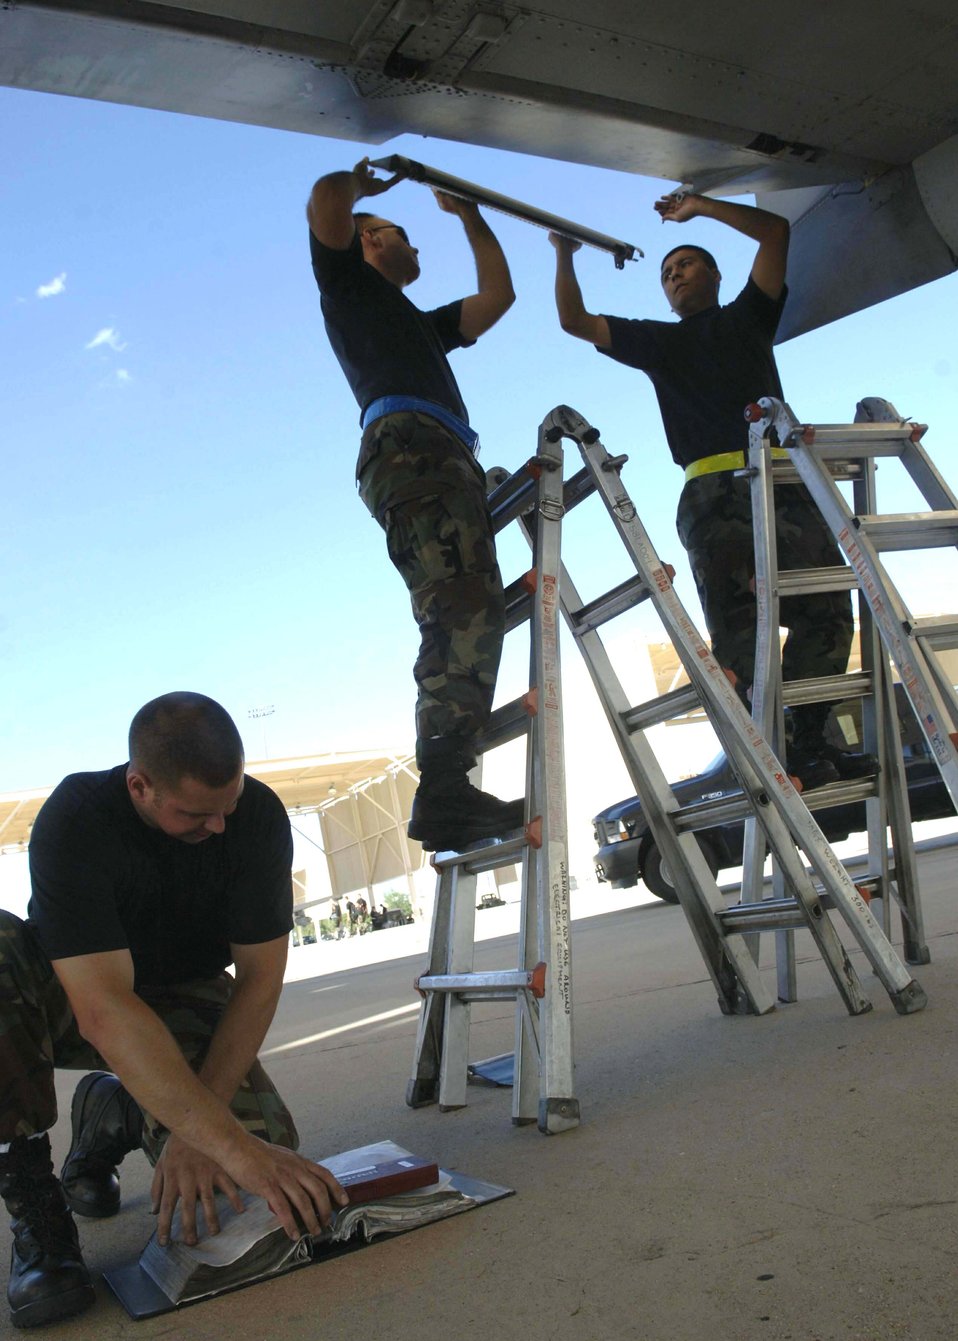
Bushwacker 06-04

Staff Sgt. Michael Marsh refers to a technical order while Staff Sgts. Erick Diaz and Moses Davenport perform maintenance on an A-10 Thunderbolt II during Exercise Bushwacker 06-04 Sept. 15 at Davis-Monthan Air Force Base, Ariz.